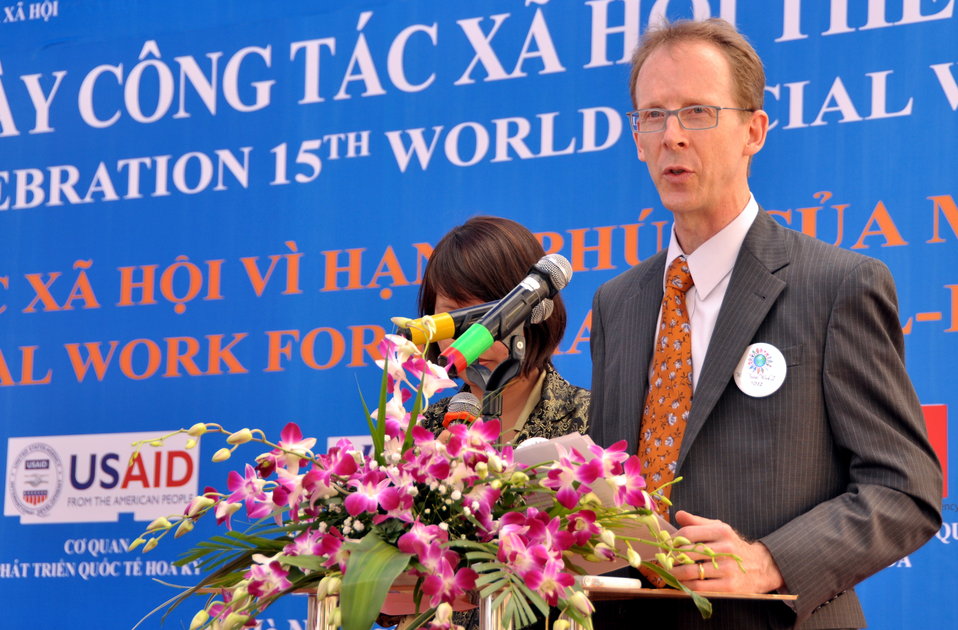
USAID Mission Director Joakim Parker speaks at the Social Work Day event in Hanoi

Photo: @USAIDVietnam, November 9, 2012